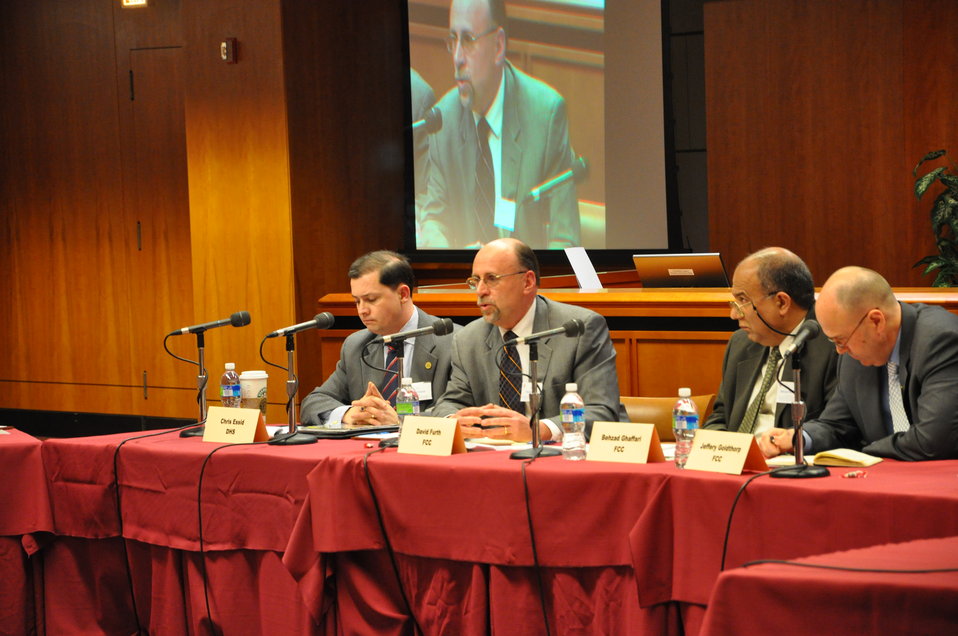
FCC ERIC Public Safety Workshop

ERIC: Public Safety Workshop; Commission Meeting Room; March 02, 2010